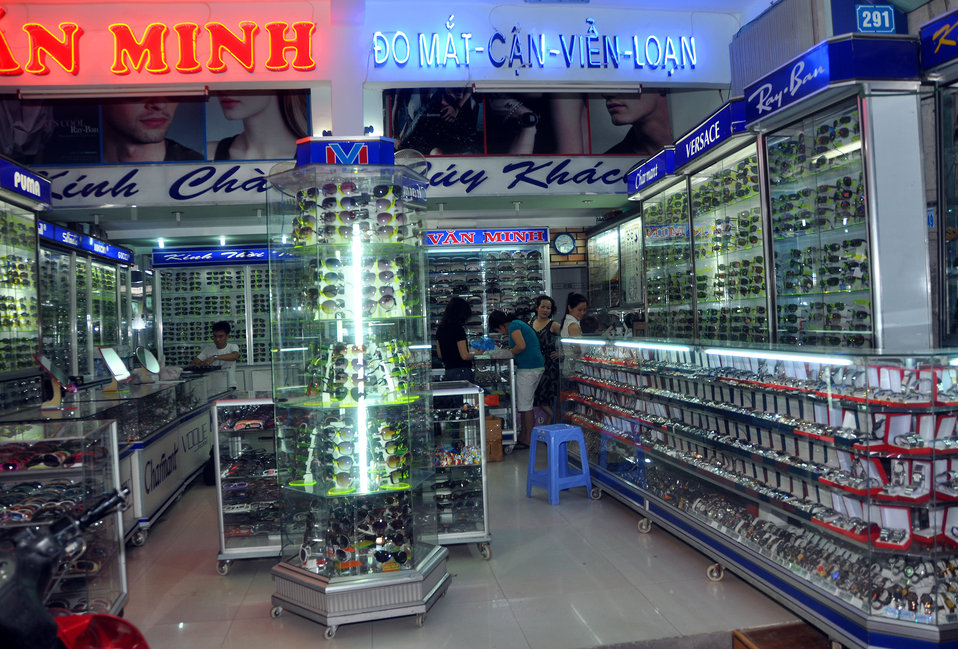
An eyeglasses specialist from the National Eye Hospital checks the quality of new glasses for students in Kon Tum.